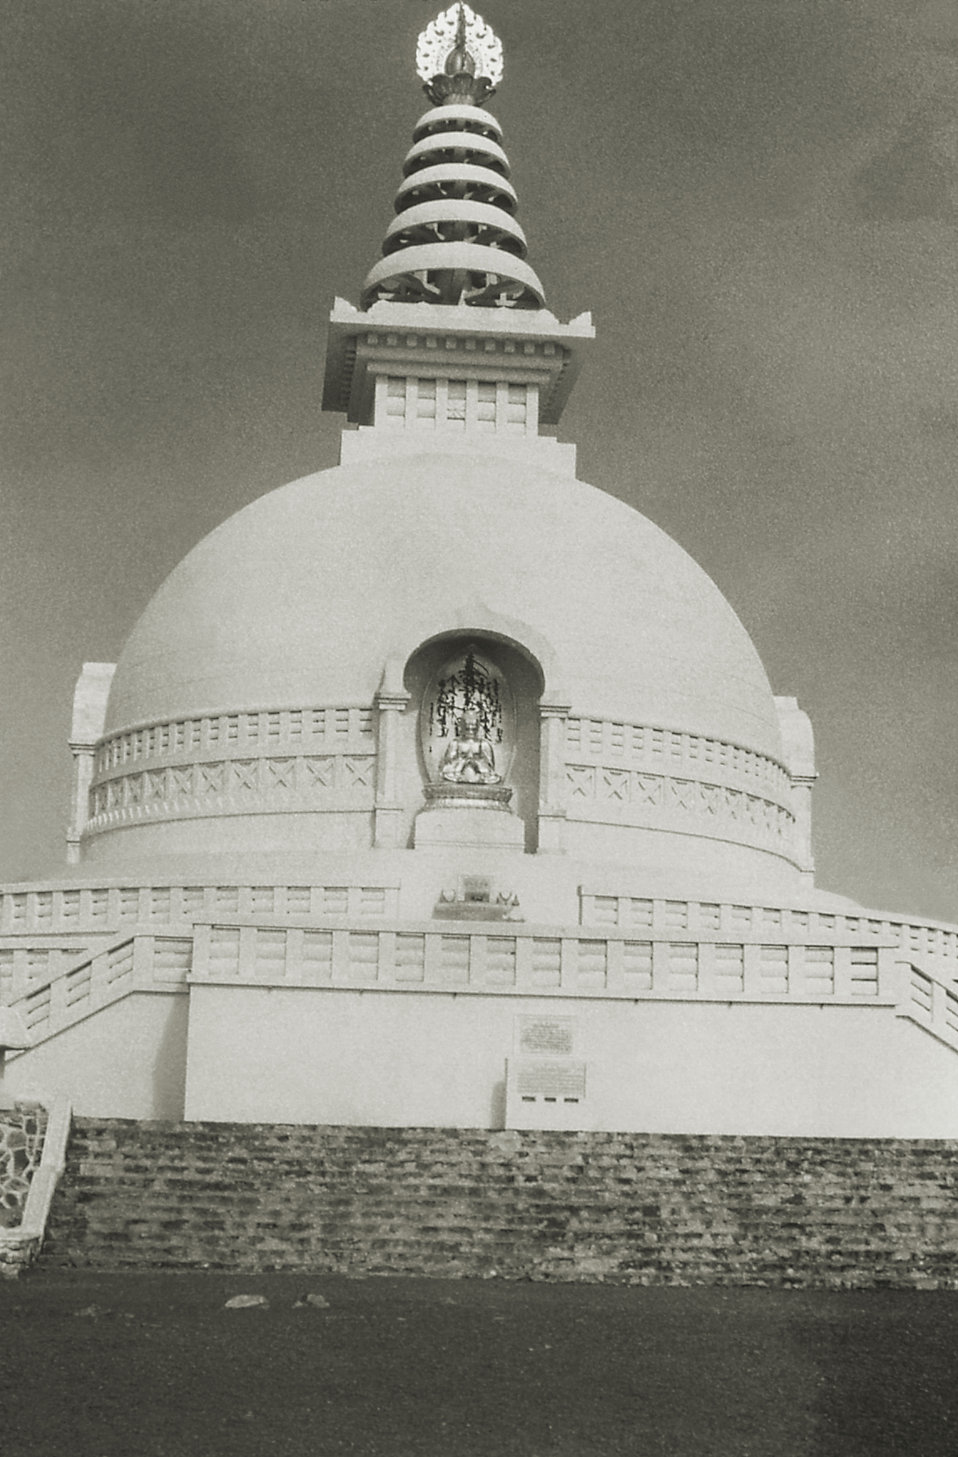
This 1975 image depicts the fa�e of the Vishwa Shanti Stupa at Rajgir, which is one of the 80 Peace Pagodas found around the world, helping to spread the message of peace and non-violence. This religious site is located in Rajgir, a city in the Nalanda district in the Indian state of Bihar.